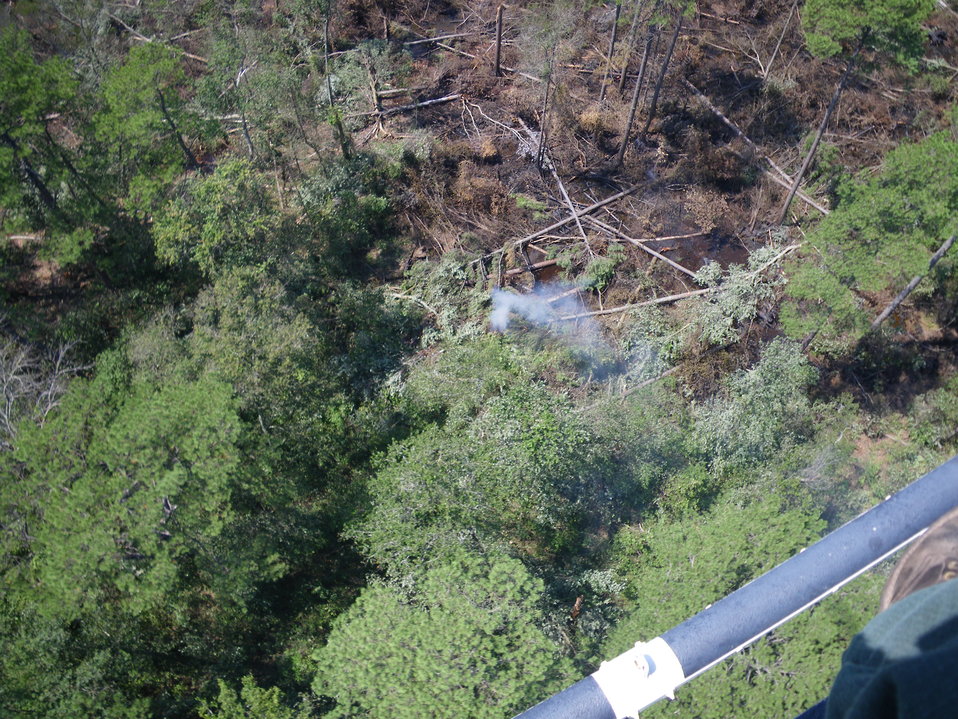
Irene didn't put all the fire out

Suffolk, VA, August 2011: A helicopter flight over the Lateral West Fire burning on Great Dismal Swamp National Wildlife Refuge after Hurricane Irene passed reveals that some areas were still burning. About 30 smoky areas were observed where fire burned deep in peat soils or where uprooted trees burned.